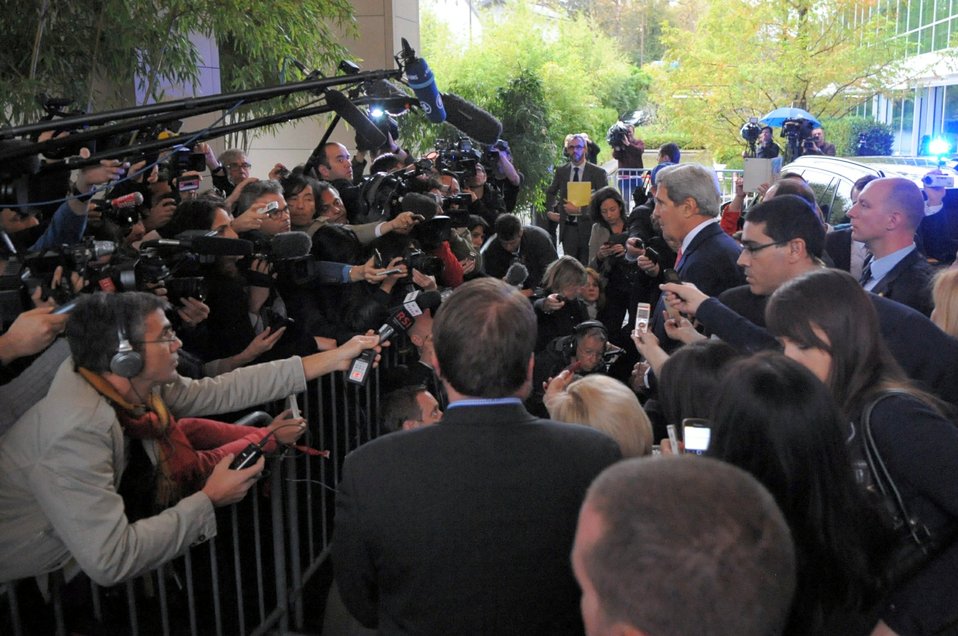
Secretary Kerry Addresses Reporters in Geneva

U.S. Secretary of State John Kerry addresses an international assembly of reporters upon arriving in Geneva, Switzerland, on November 8, 2013, for talks with P5 1 members and Iran about that country's nuclear capabilities.